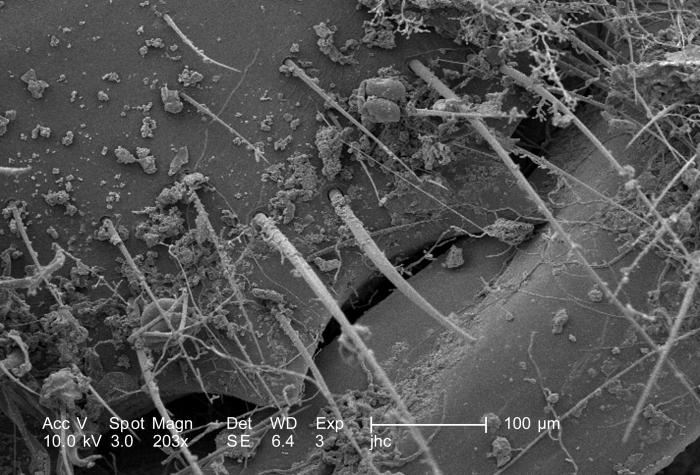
Revealed using a scanning electron microscope (SEM), at a magnification of 203X, were some of the exoskeletal ultrastructural characteristics of an unidentified debris-laden insect, which had been discovered deceased in the suburbs of Decatur, Georgia. Depicted in this particular image was a section of the insect's head region. The scattered particulate matter adorning the insect's exoskeletal surface was merely environmental debris common to its habitat.